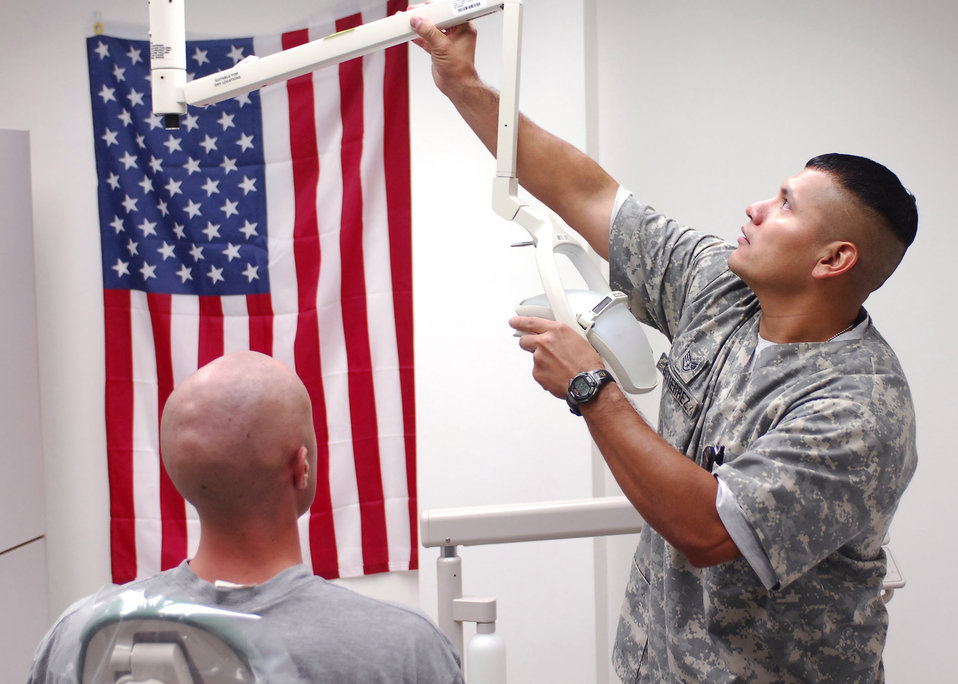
Family uses technology to cope with deployment separation

Staff Sgt. Juan Gutierrez sets up for a patient Sept. 26, 2009, at Bagram Airfield, Afghanistan. Sergeant Gutierrez is deployed from Randolph Air Force Base, Texas, to Afghanistan for six months, currently serving as the dental clinic NCO in charge for Task Force Medical.